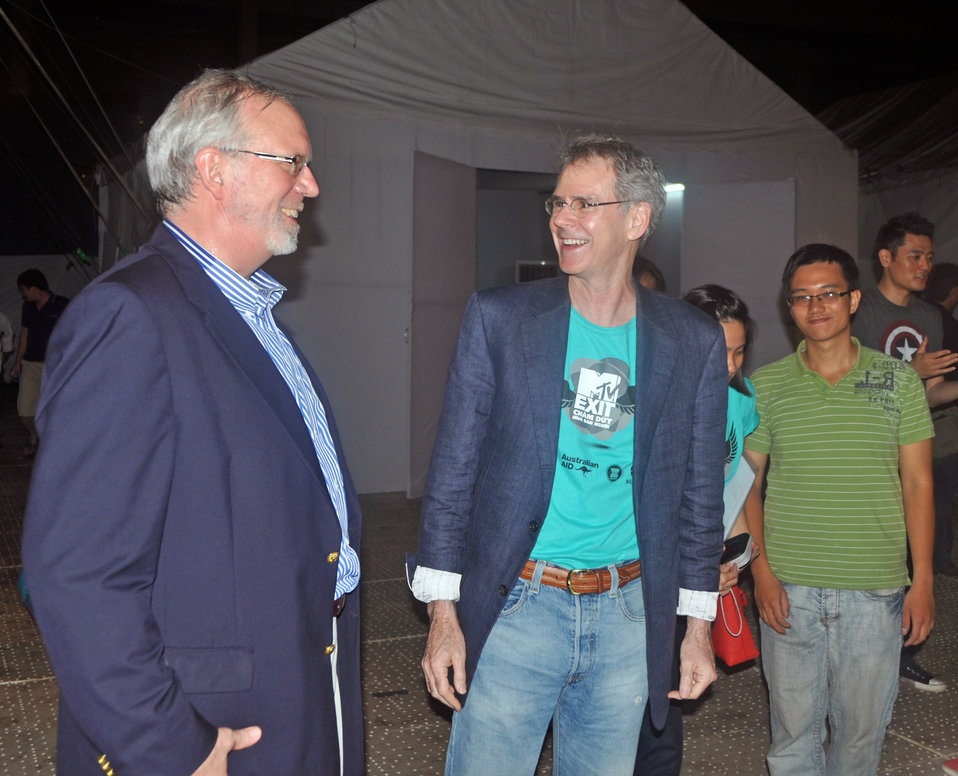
U.S. Ambassador to Vietnam, David Shear, left, and U.S. Ambassador to ASEAN, David Carden, backstage at the MTV EXIT concert in Hanoi

USAID supports MTV EXIT concert against human trafficking and exploitation